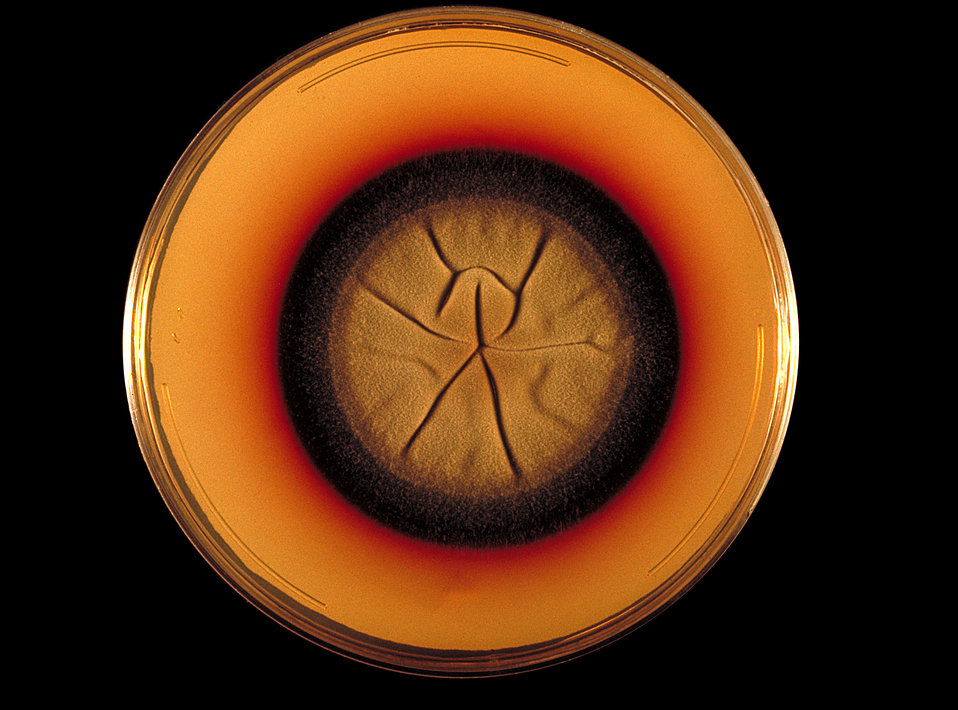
This is a plate culture of Ochroconis gallopavum, formerly Dactylaria gallopava, isolated from a 6 day old chicken brain, and grown for 7 days, at 37�C.